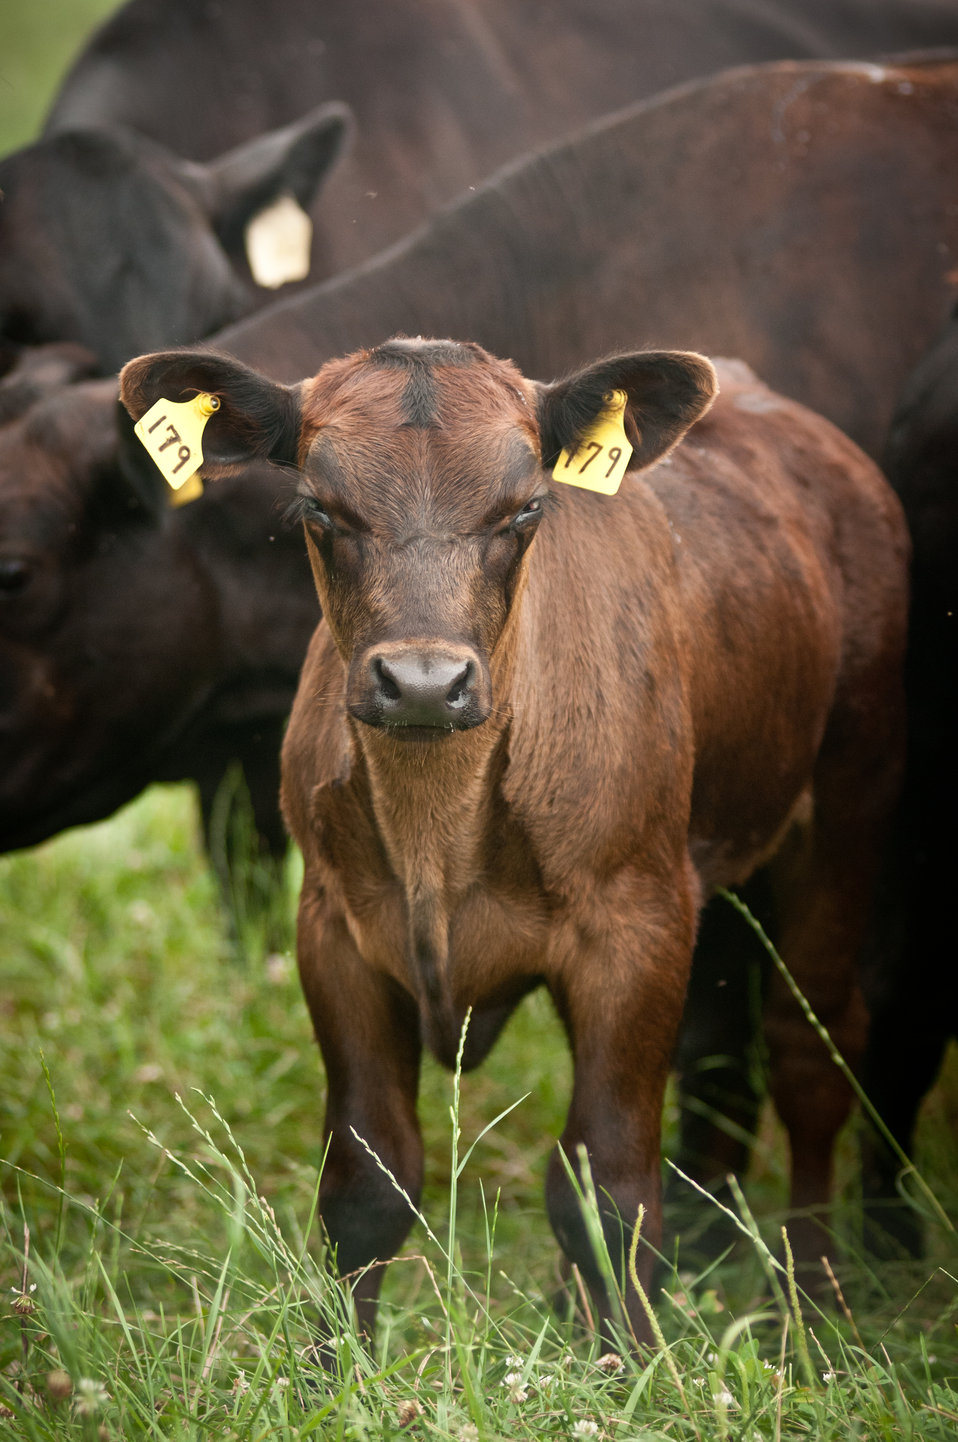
Black Angus cows and calves graze organic pastures, and for added nutrition and variety, they enjoy a daily feeding of sweet silage at Nick’s Organic Farm, owned by Nick Maravell, in Adamstown, MD on Friday, July 12, 2013. The white plastic wrapped bales of pasture grass and alfalfa have been fermenting for months to create sweet silage that stores well and can be used to feed cattle at varying amount all year long. The fermentation process sweetens the taste and increases the vitamin levels. The farm produces Black Angus beef, chicken, turkey, eggs, hay, soybeans, corn, alfalfa, orchard grass, rye; and other crops. The cattle are 100% grass-fed receiving certified organic pasture, certified organic hay (in winter), water and mineral salts mixed with sea kelp. The cattle are not fed hormones, antibiotics or animal products. Poultry feed from grain is ground from organic grain. The poultry also graze on organic pastures. The farm has conducted on-farm research with federal, state and non-profit agencies to refine organic practices. An organization such as the U.S. Department of Agriculture (USDA) Agricultural Research Service (ARS) center in Beltsville has been able to conduct research to improve organic crops and to breed and manage the cattle so that they have.